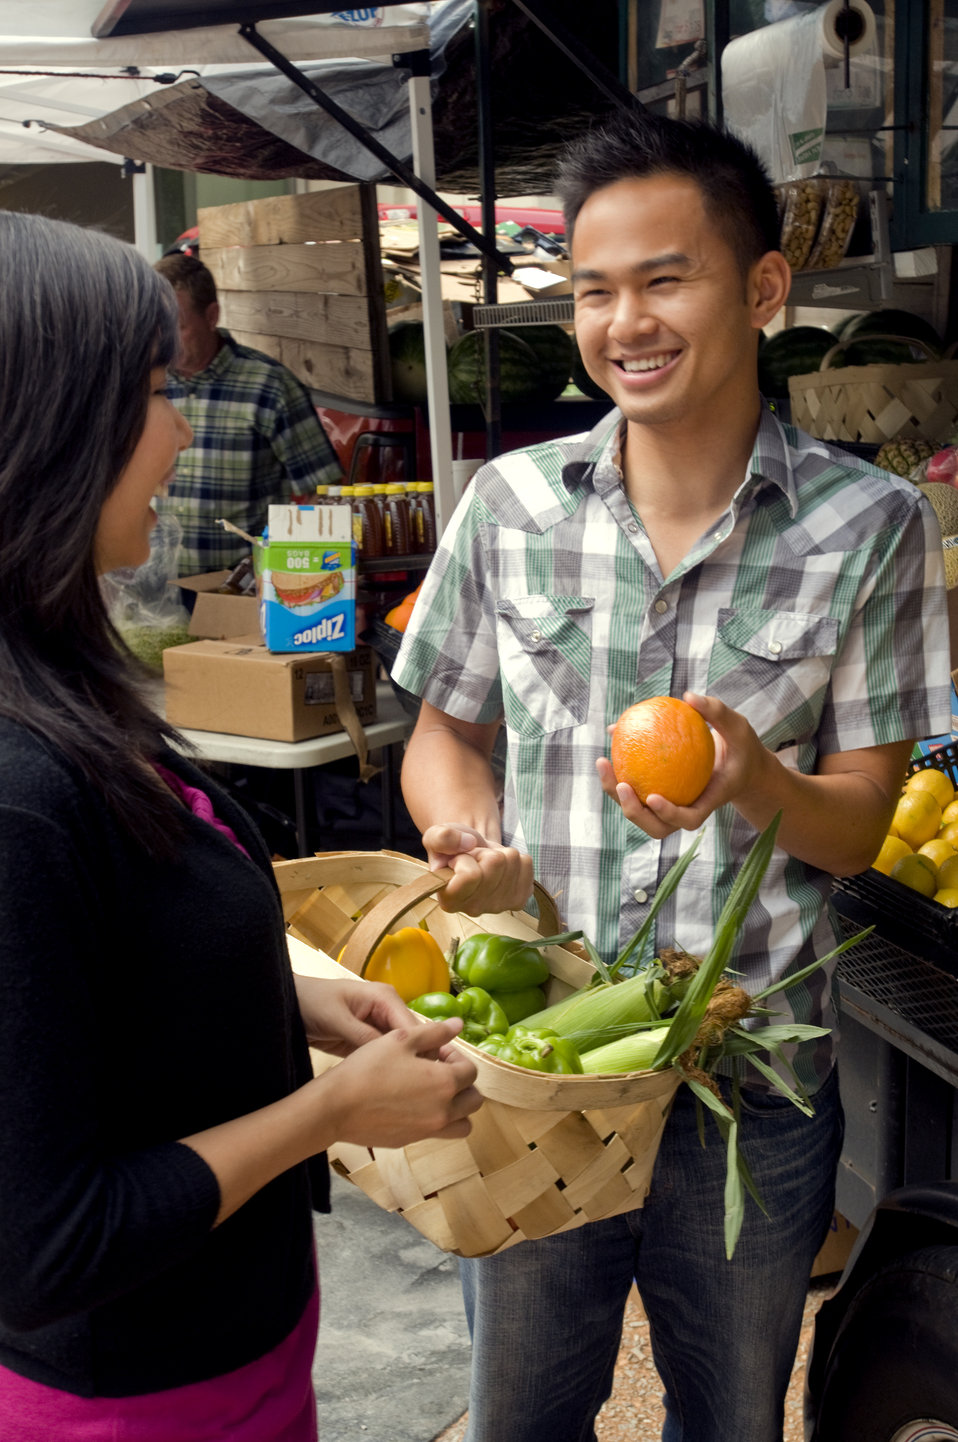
While shopping at a mobile Georgian farmers market, the man and woman depicted here were discussing the market's produce offerings, as the man held up an orange he'd chosen to purchase, as one of his many produce selections added to his woven wooden carry basket. The basket was being filled with his choices including ears of corn, green bell peppers, and a yellow bell pepper.